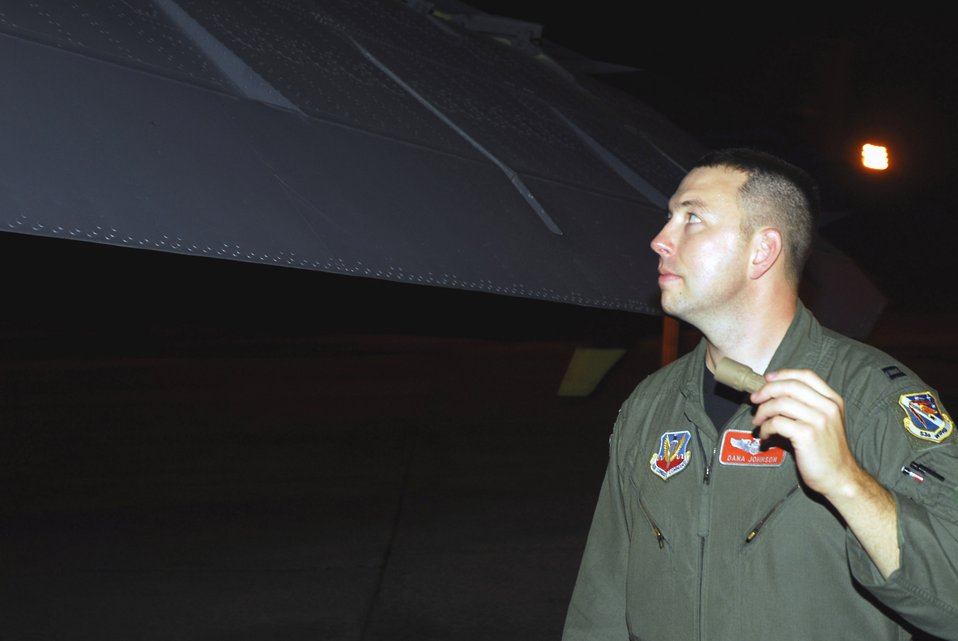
Barksdale Airmen recreate history

Capt. Dana Johnson conducts a pre-flight inspection of a 2nd Bomb Wing B-52H Stratofortress prior to a maritime intercept training mission, Aug 24. He is an advanced systems project officer assigned to the 49th Test Squadron.